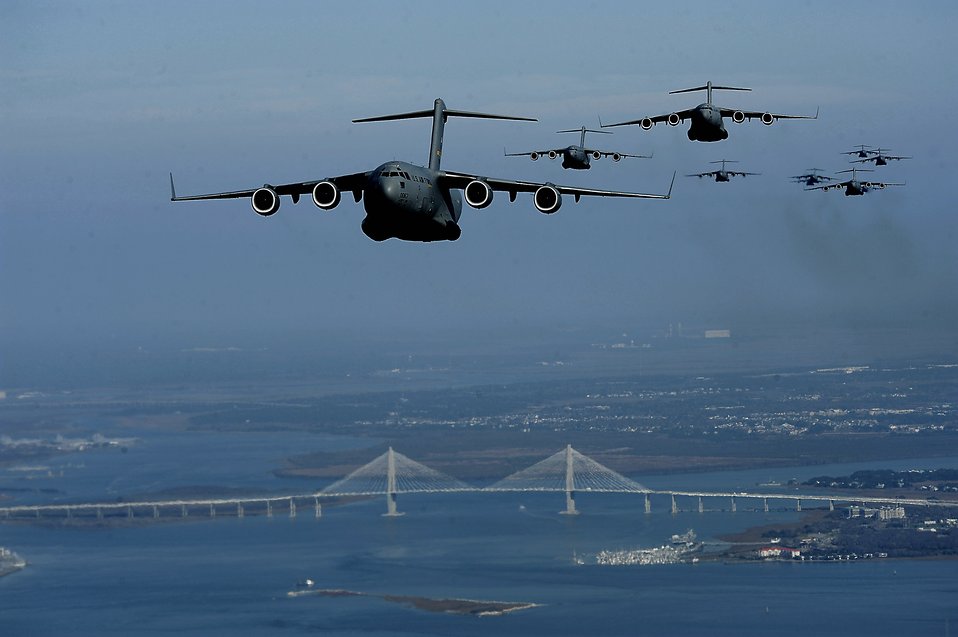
Here come the troops

C-17 Globemaster IIIs from the 437th Airlift Wing and 315th AW at Charleston Air Force Base, SC., fly in formation Dec. 18 over Charleston S.C., during an Army strategic brigade airdrop exercise.